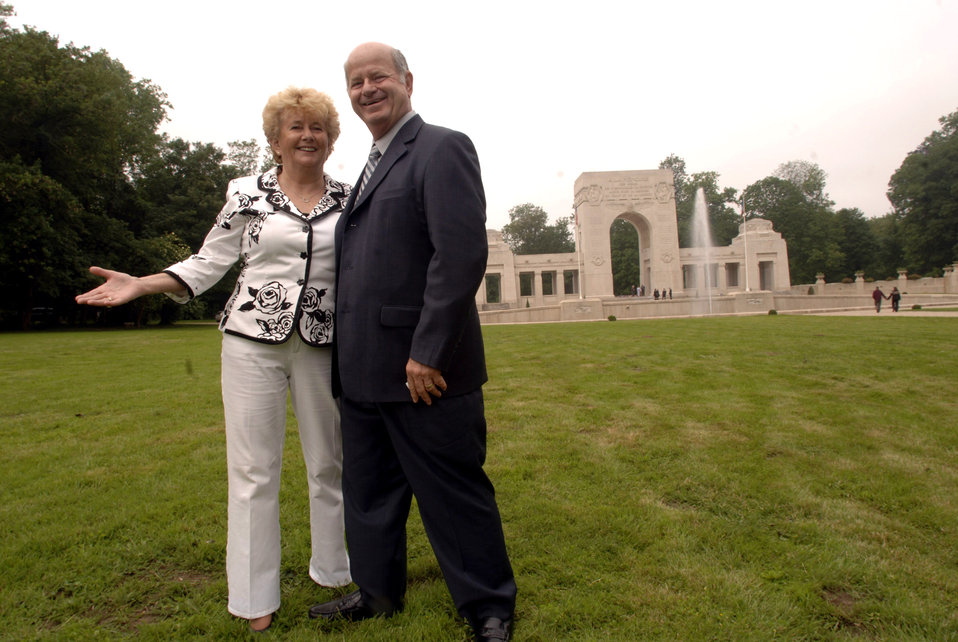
Early aviators memorialized

Retired Master Sgt. Edward Prince and his wife, Helene, are at the Lafayette Memorial outside Paris where a ceremony took place to pay homage to the United States' first combat aviators who comprised the Lafayette Escadrille. The all-American squadron of volunteers flew under the French flag during World War I where many gave their lives. Sergeant Prince is a third-generation cousin of Lafayette Escadrille aviator Norman Prince who died Oct. 15, 1916 due to injuries sustained in a crash landing.